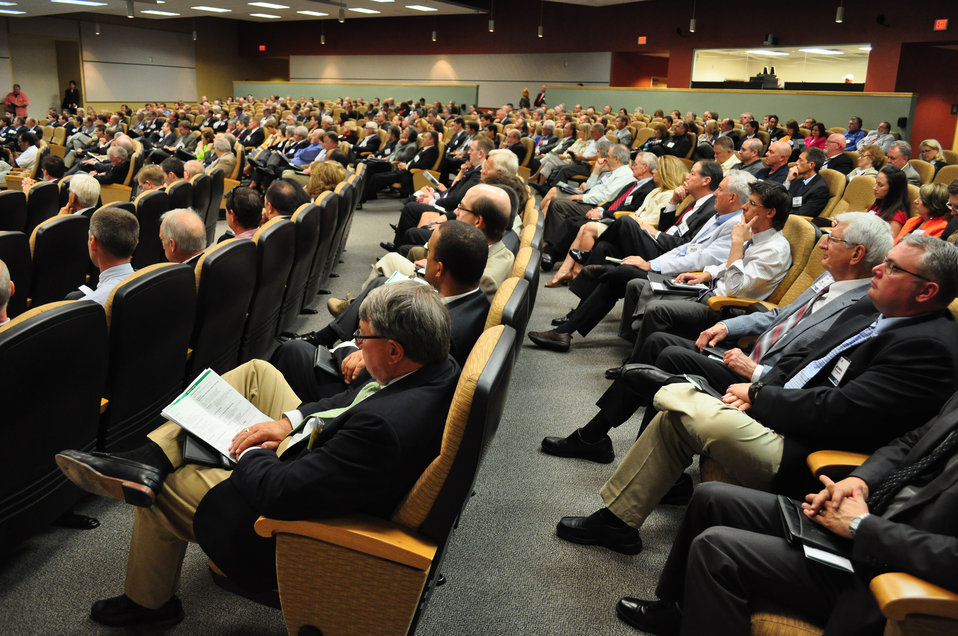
Tennessee Valley Corridor 2013 Oak Ridge

13-062 DOE photo Lynn Freeny 5-29-2013 Oak Ridge Tennessee